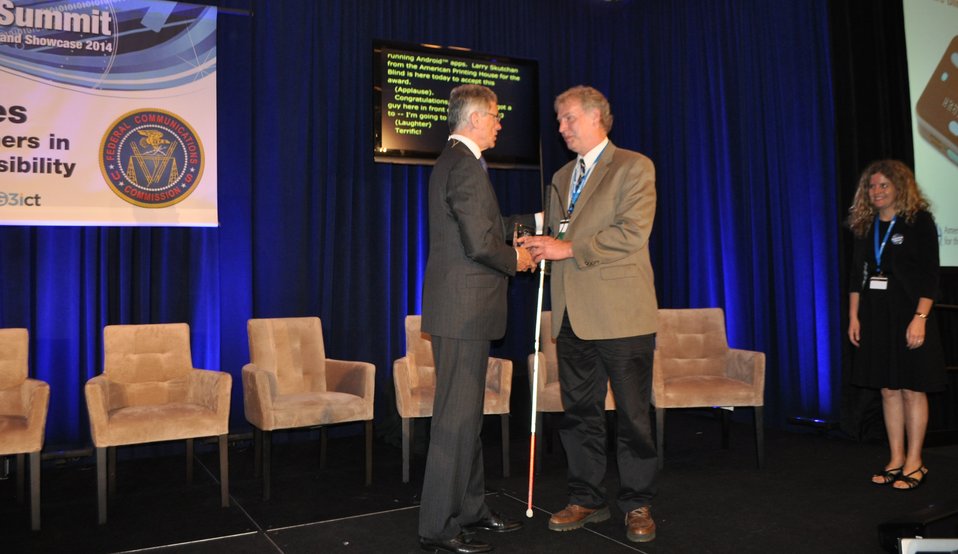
6.9.2014 Third Annual Chairman’s Awards for Advancement in Accessibility

Winner for the category of Advanced Communication Services: Braille Plus 18: Larry Skutchan accepting this award.